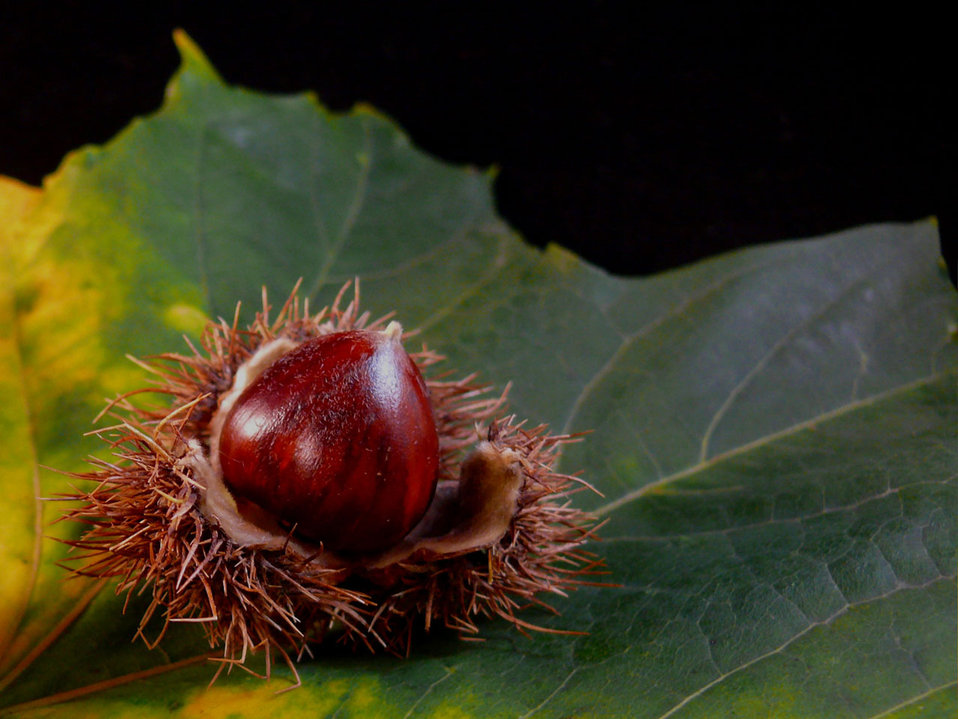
Autumn

Leaf on black backround.